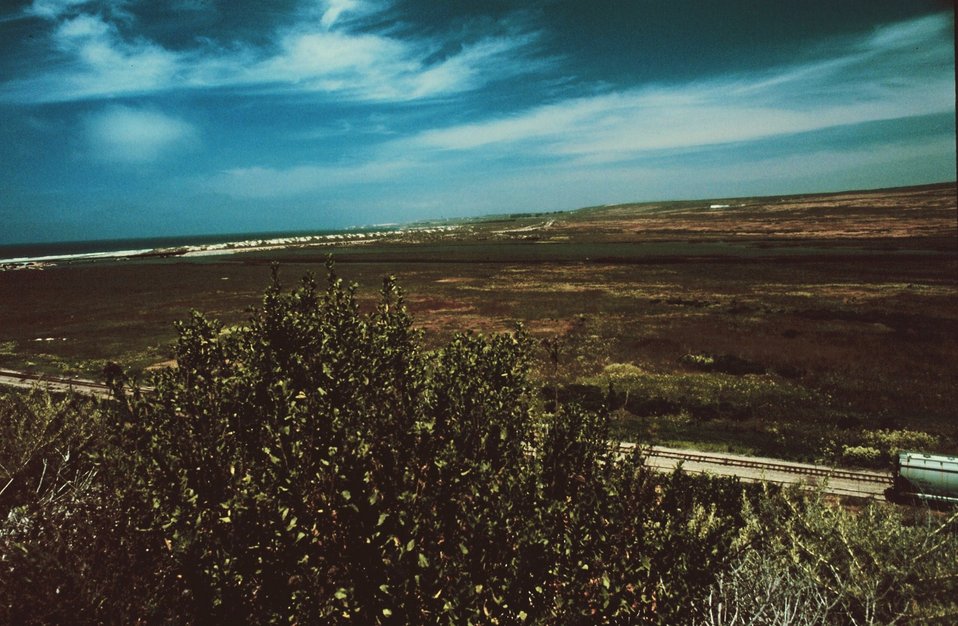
Looking over coastal wetlands towards a strand of beach near Vandenburg AFB